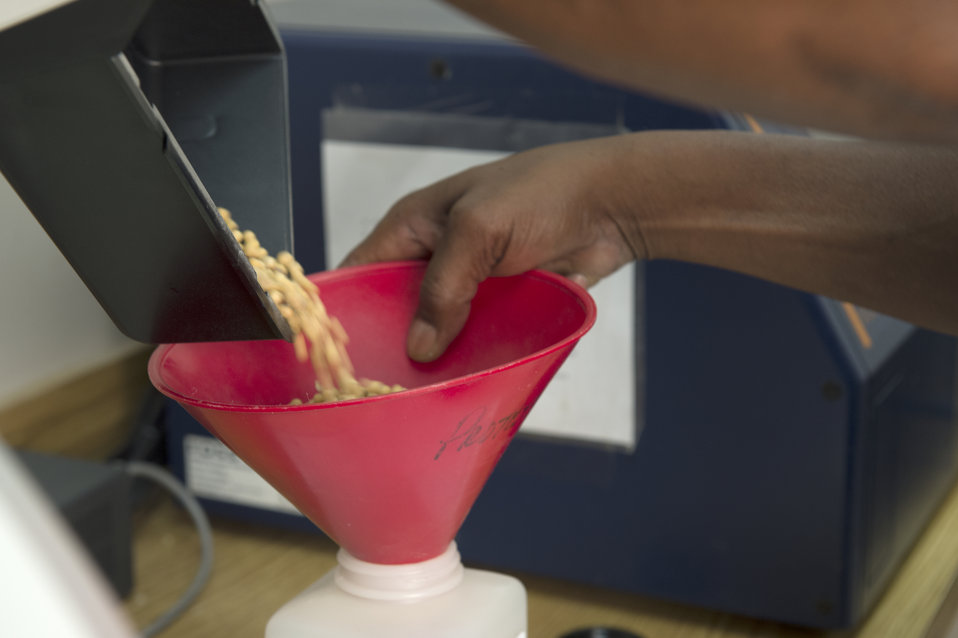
U.S. Department of Agriculture (USDA) Grain Inspection, Packers and Stockyards Administration (GIPSA) Federal Grain Inspection Service (FGIS) employee tests soybean samples at the FGIS inspection laboratory in New Orleans, LA on Monday, Nov. 18, 2013.